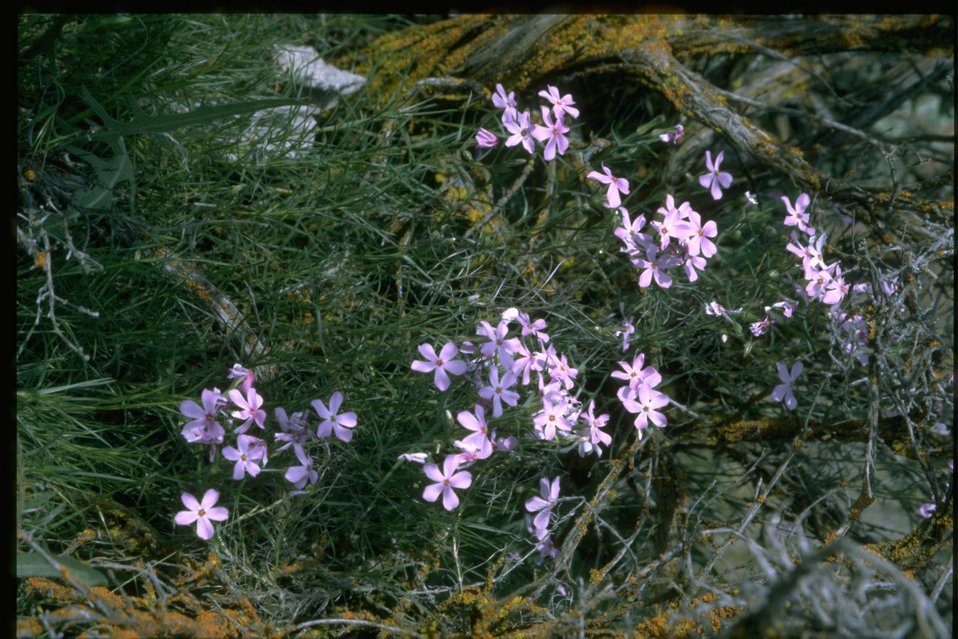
Medium shot of Phlox wildflowers.